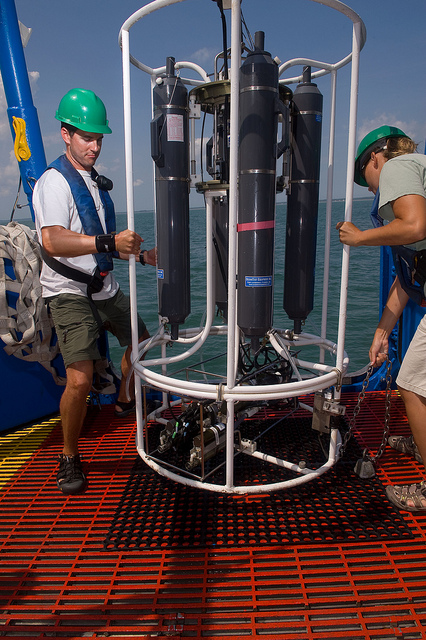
Bold water samples

August 17, 2010. Sensing device called the SeaBird Conductivity, Temperature Depth (CTD). The device measures conductivity of water to determine salinity, temperature, and depth. Data is transmitted aboard and plots of variables recorded as the device is lowered through water column. Lids on the grey bottles are closed remotely to capture water samples from specific depth for further testing. Bill Richardson, EPA Region 3.